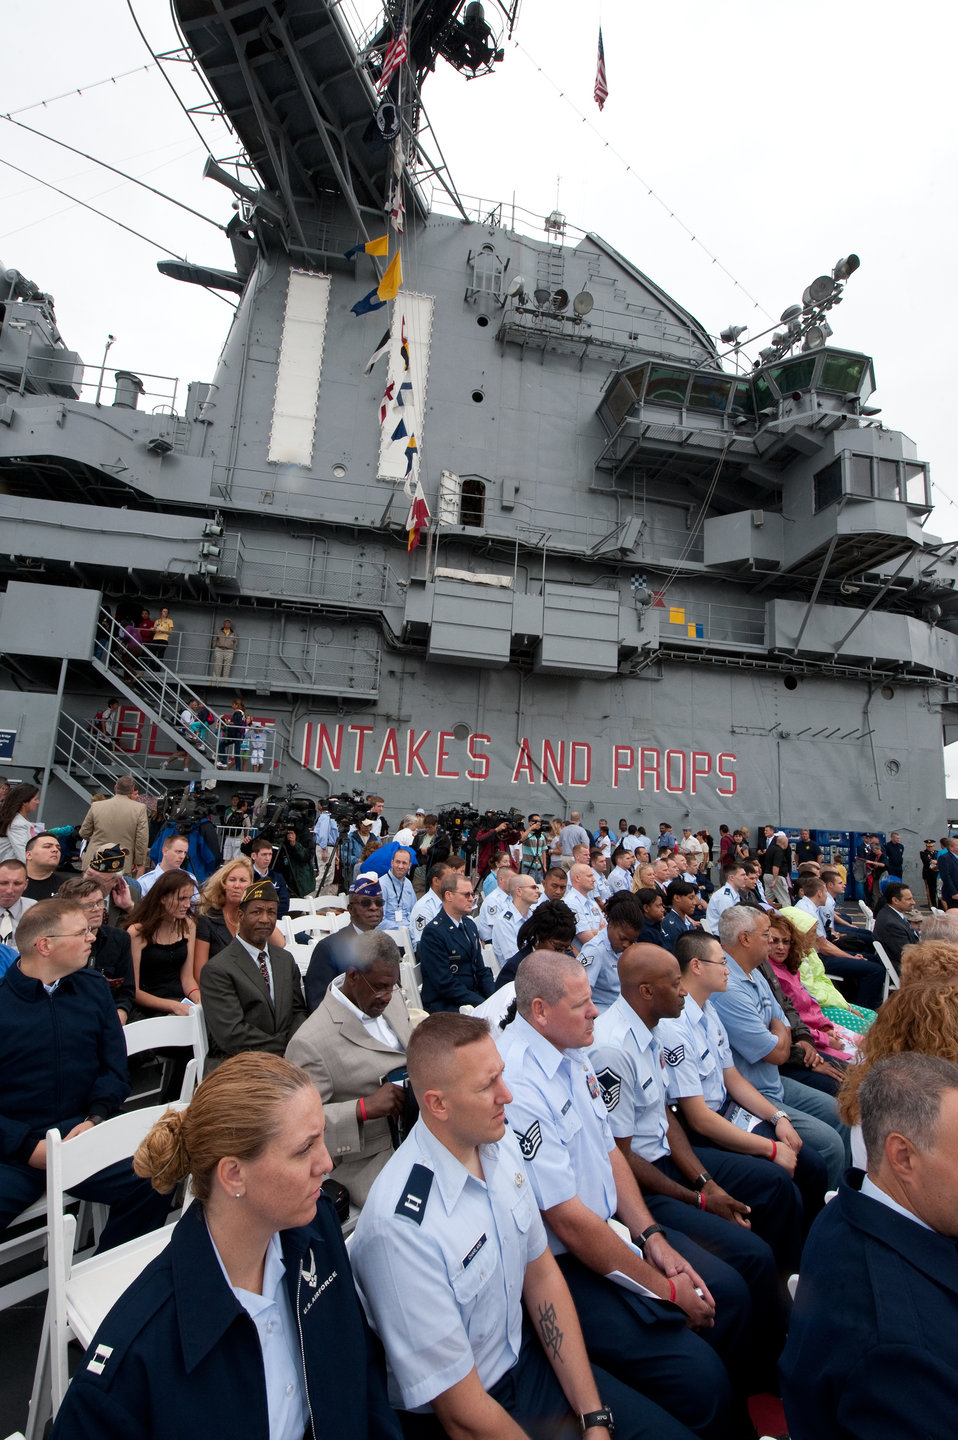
Air Force Week New York City Proclamation Ceremony

Invited guests, nationaland international visitors of the USS intrepid during the Air Force Week New York City proclamation ceremony on Aug. 24, 2010. The event at the Intrepid Sea, Air & Space Museum was highlighted by a six-ship flyover by the USAF Thunderbirds. The Honorable Michael Donley, Secretary of the Air Force attended, along with General Raymond Johns, Commander of Air Mobility Command. The Police Commissioner of the City of New York, the Honorable Raymond Kelly, represented NYC. Mr. Greg Kelly of